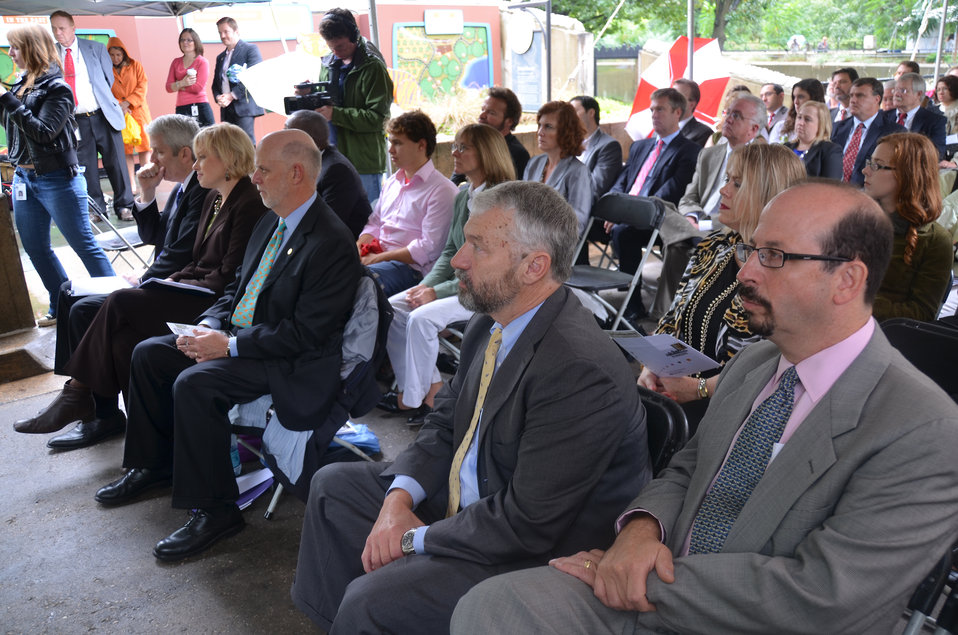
Save Vanishing Species Stamp First Day of Issue